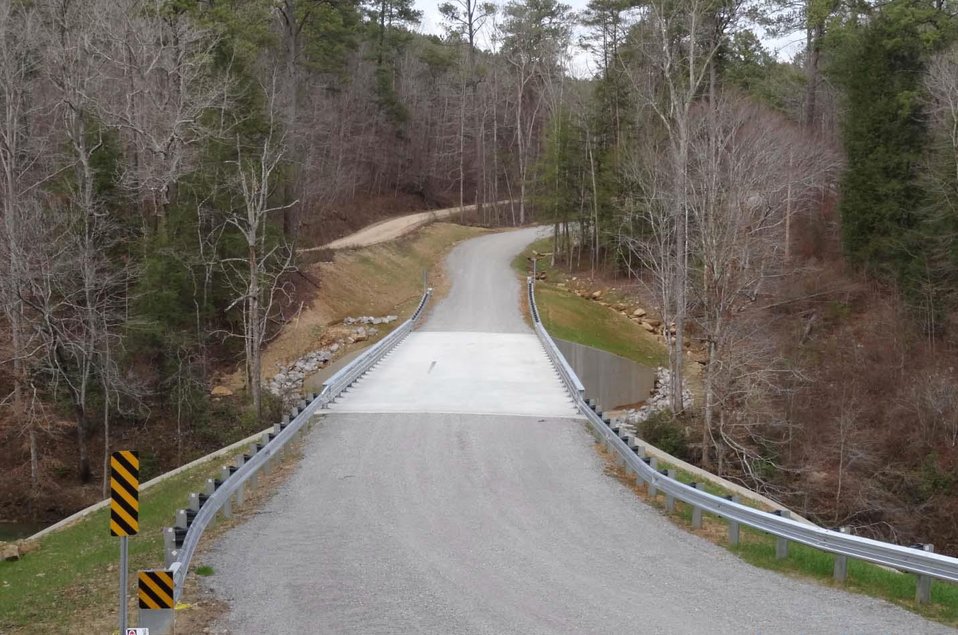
brushy two

Looking north at the new Brushy Creek Bridge in the Bankhead National Forest in Double Springs, AL in 2012. The project employed local community workers who built the bridge, which is now helping to improve habitat for fish and other aquatic organisms, reducing sediment deposits in the local streams and rivers, and improving access for visitors.